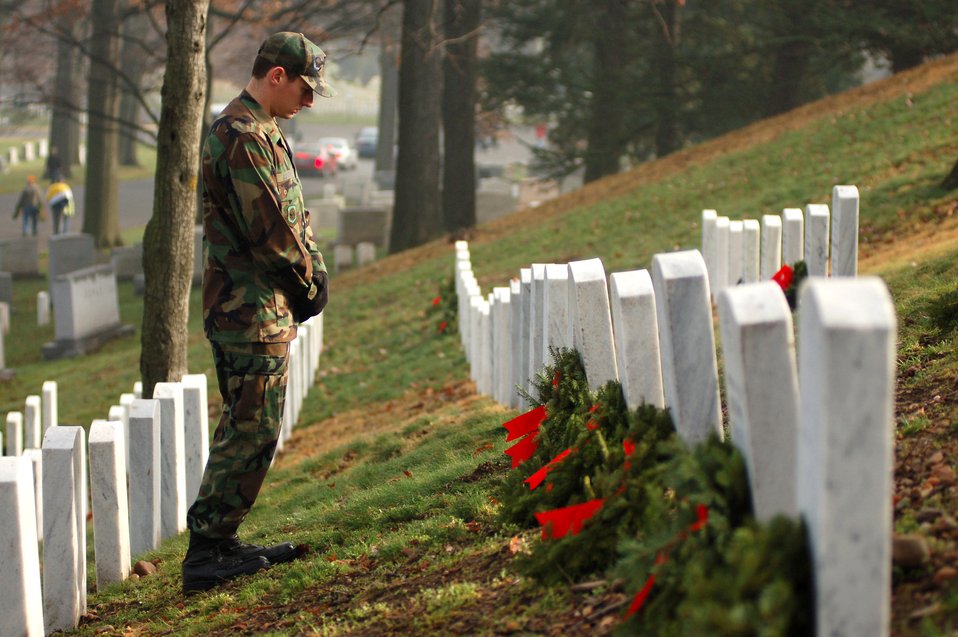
Not forgotten

2nd Lt. Kevin Schaekel looks at a wreath he just laid Dec. 14 at Arlington National Cemetery in Virginia. He was one of 44 Dover Air Force Base, Del., Airmen who volunteered to help lay 5,000 wreaths at the cemetery to honor those who have served their country and passed on. Lieutenant Schaekel is assigned to the 436th Civil Engineer Squadron.